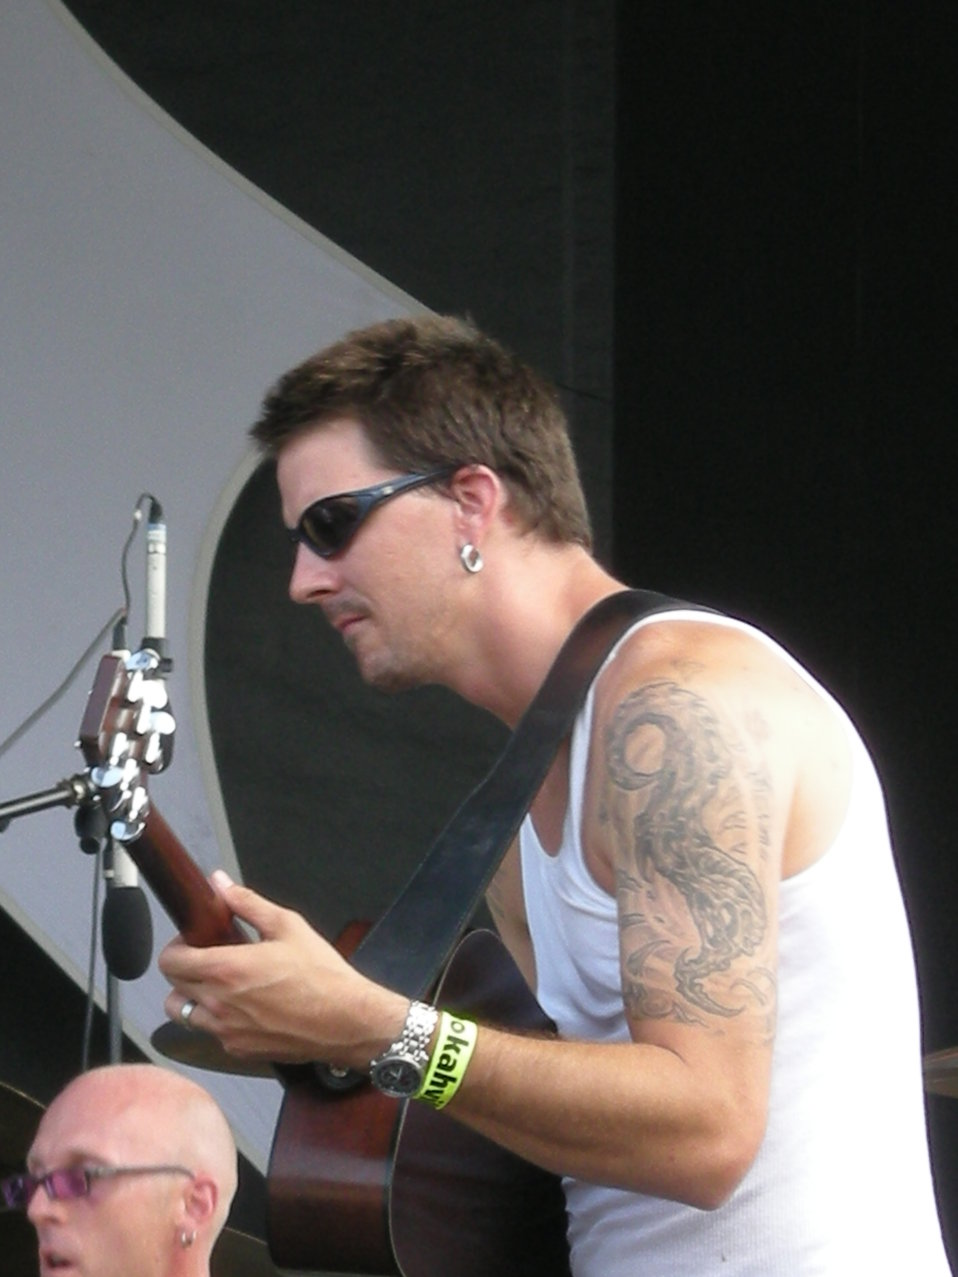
A.P. Hill, Lead Vocal and Acoustic Guitar for Oakhurst